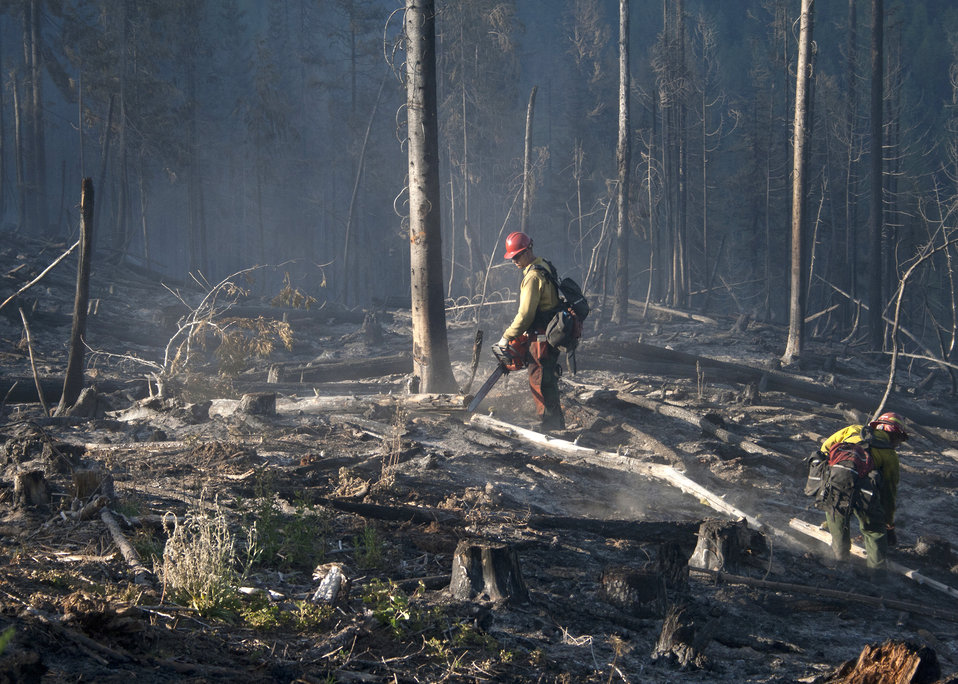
Firefighters supported by three fire engines, two helicopters, two water tenders, a dozer and an air tanker battled to contain the 90 acre Rogers Fire located on Mt. Rogers five miles west of Aladdin, WA on the Colville National Forest. Firefighters worked under adverse conditions with steep terrain and gusting winds to reduce the loss of timber and protect the Rogers Mountain Trail. The Rogers Fire began on Aug. 9, 2011 and was controlled by Aug. 19, 2011 with mop up crews ensuring that no flare-ups occurred. Colville National Forest has 1.1 million acres in northeastern Washington and includes the Kettle River, Selkirk Mountain ranges, and the upper reaches of the Columbia River.